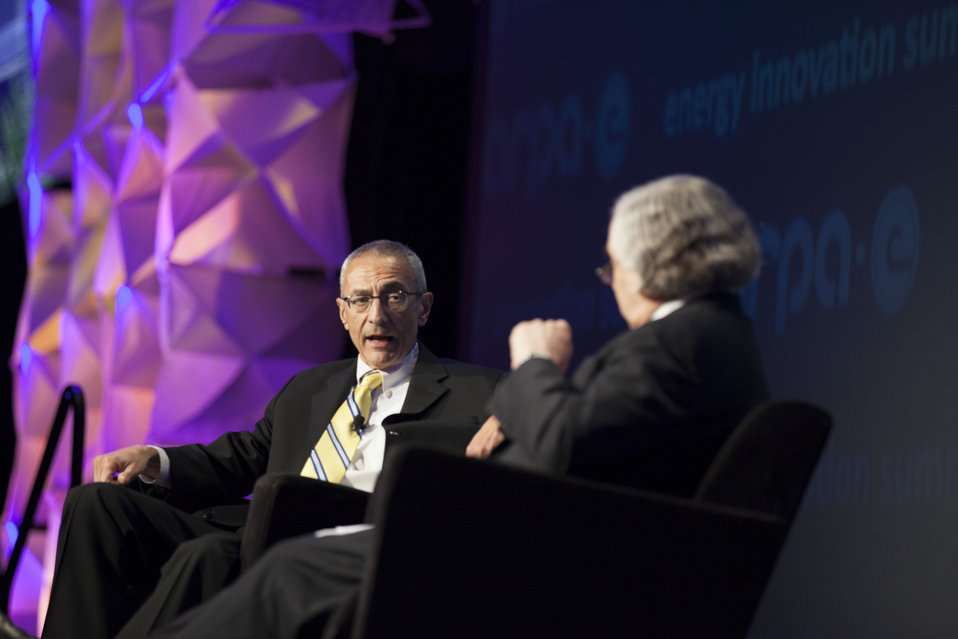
In this photo, Energy Secretary Ernest Moniz sits down for a fireside chat with Counselor to the President John Podesta to discuss the administration’s all-of-the-above energy strategy, as well as how the administration is addressing climate change.